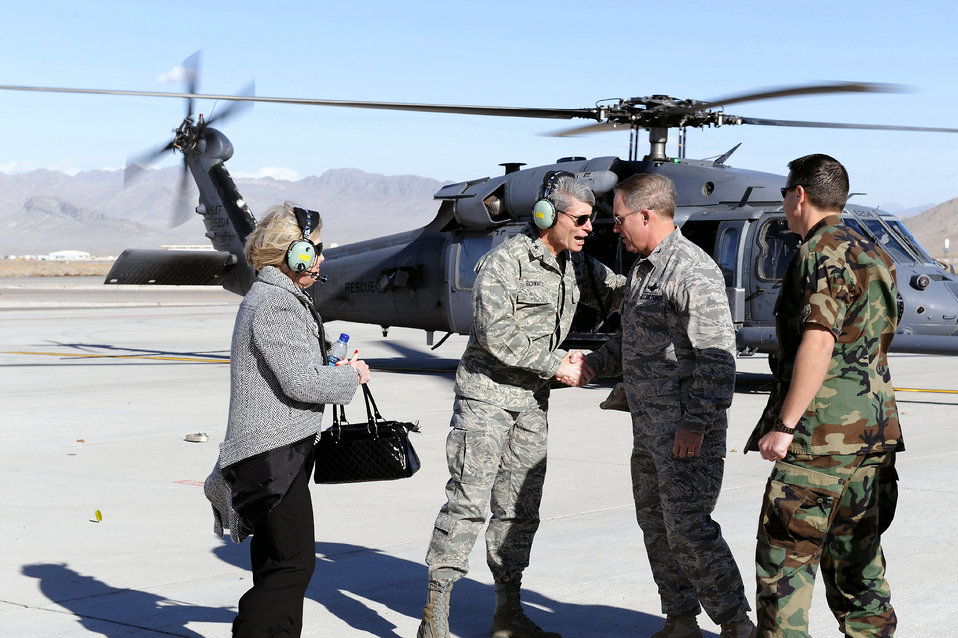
CSAF sees full spectrum of fly, fight, win

Col. Chris Chambliss and Col. John Montgomery greet Gen. Norton Schwartz, Air Force Chief of Staff, and his wife Suzie, as they arrive on the flightline at Creech Air Force Base, Nev., Dec. 13. General Schwartz and Mrs. Schwartz visited the base to meet Airmen and get a first-hand look at MQ-1 Predator and MQ-9 Reaper operations and the quality of life. Colonel Chambliss is the 432nd Wing and 432nd Air Expeditionary Wing commander. Colonel Montgomery is the 432nd Wing and 432nd AEW vice commander.